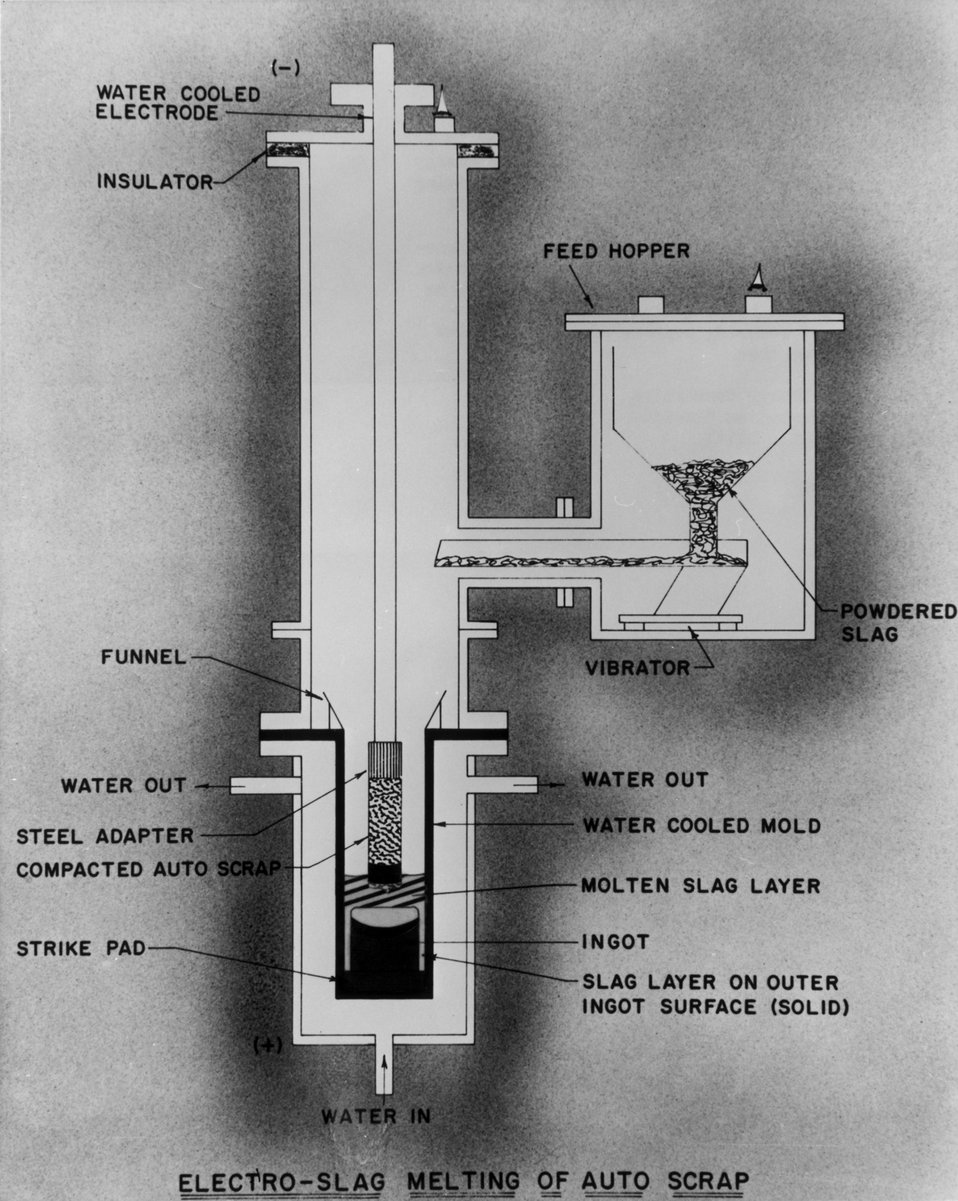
Auto scrap containing cooper, tin, and chromium can be compacted into electrodes and melted by resistor heating in the electro-slag furnace in a method under development at the U.S. Energy Commission's Ames Laboratory in Iowa for reclaiming automotive scrap. c. 1973